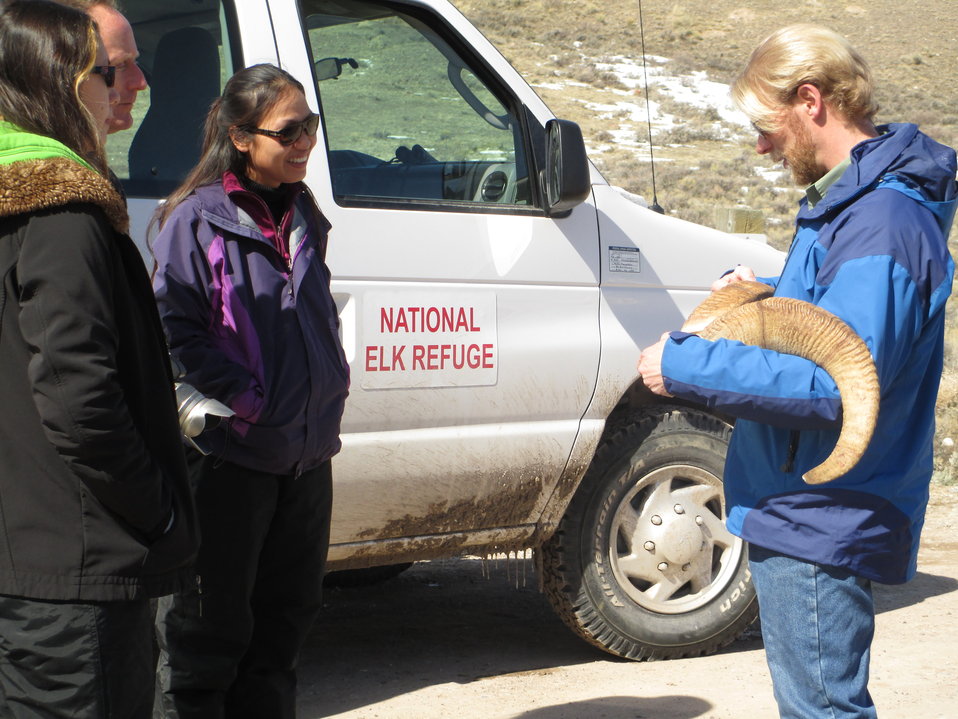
A Handy Prop

Naturalists take props along on the wildlife excursions to use as part of their interpretive presentations.